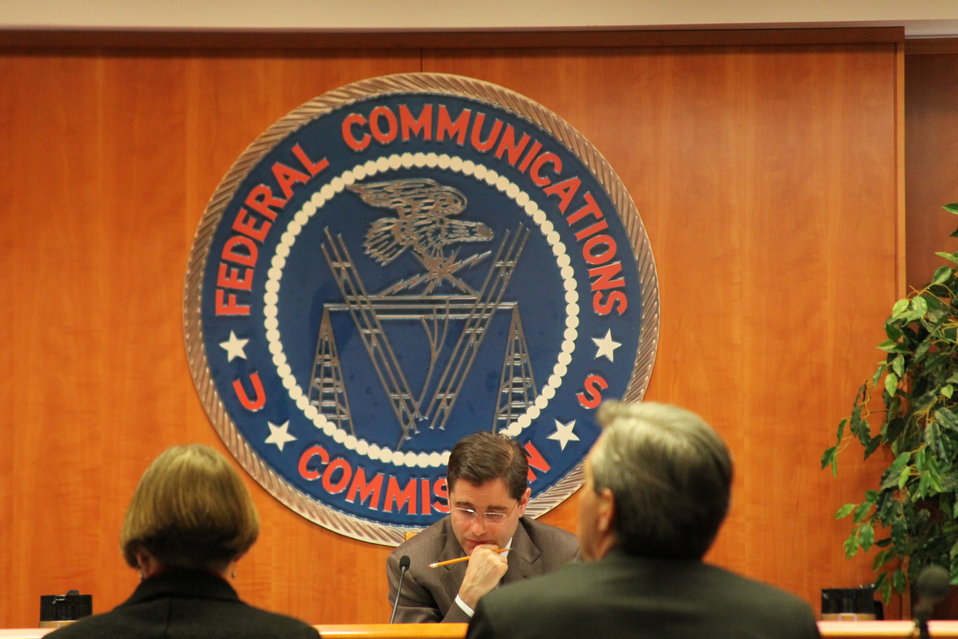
Open Commission Meeting - 2/18/2010

The Federal Communications Commission will hold an Open Meeting in Washington, DC. on February 18, 2010, which will include the following items:

E-Rate: An Order and Notice of Proposed Rulemaking to enable schools that receive funding from the E-Rate program to allow members of the general public to use the schools' Internet access during non-operating hours at no additional cost to the Universal Service Fund. This order and notice do not permit or require any changes to E-Rate applications due on February 11, 2010; Ex Parte Reform: A Notice of Proposed Rulemaking to improve the transparency and effectiveness of the FCC's decision-making process by reforming the ex parte rules; Procedural Reform: A Notice of Proposed Rulemaking to enhance the efficiency, openness, and transparency of the Commission's proceedings by improving and modernizing certain organizational and procedural rules; National Broadband Plan Status Report: Commission staff will report on the status of the National Broadband Plan, providing a framework for the national purposes portion of the Plan.